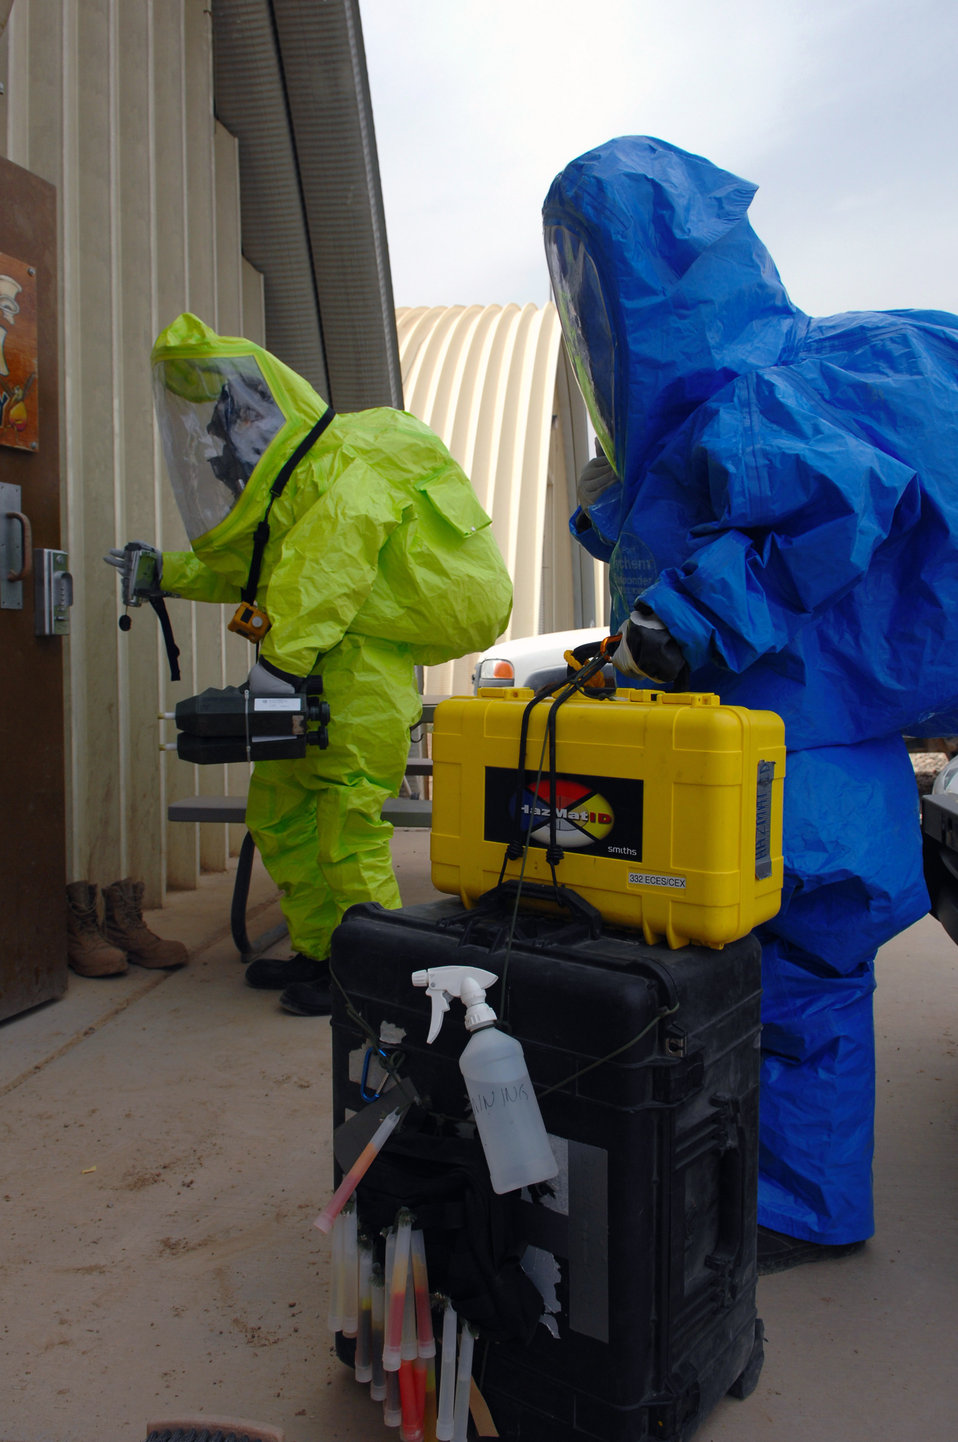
Battle drills condition emergency responders

Senior Airmen Krista McVicar and Michael Blair respond to a mysterious substance scenario during a battle drill March 26 at Balad Air Base, Iraq. Emergency managers must identify questionable substances and employ the proper procedures needed to secure the area. Both Airmen are 332nd Expeditionary Civil Engineer Squadron emergency managers. Airman McVicar is deployed from Davis-Monthan Air Force Base, Ariz.; Airman Blair is deployed from McGuire Air Force Base, N.J.